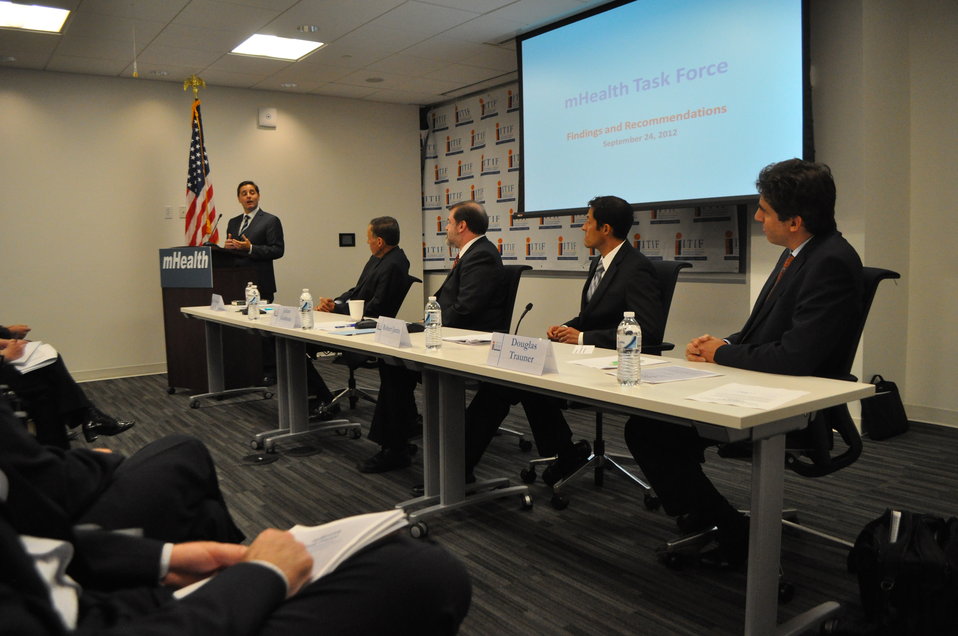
mHealth Task Force Findings and Recommendations Event - DSC 0665